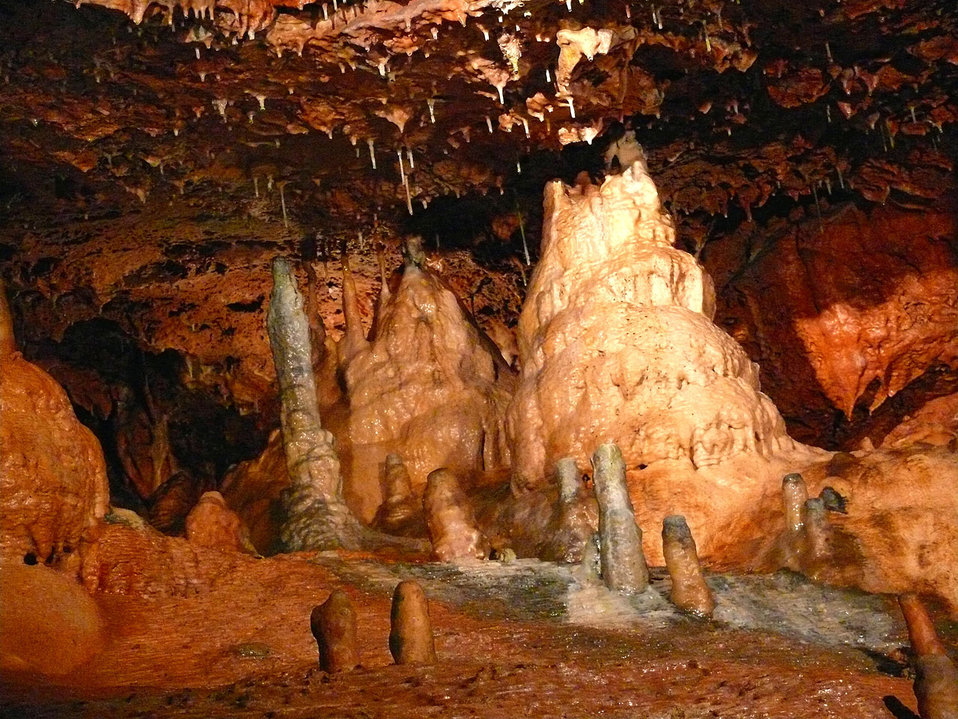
Kents cavern

Cave in torquay.